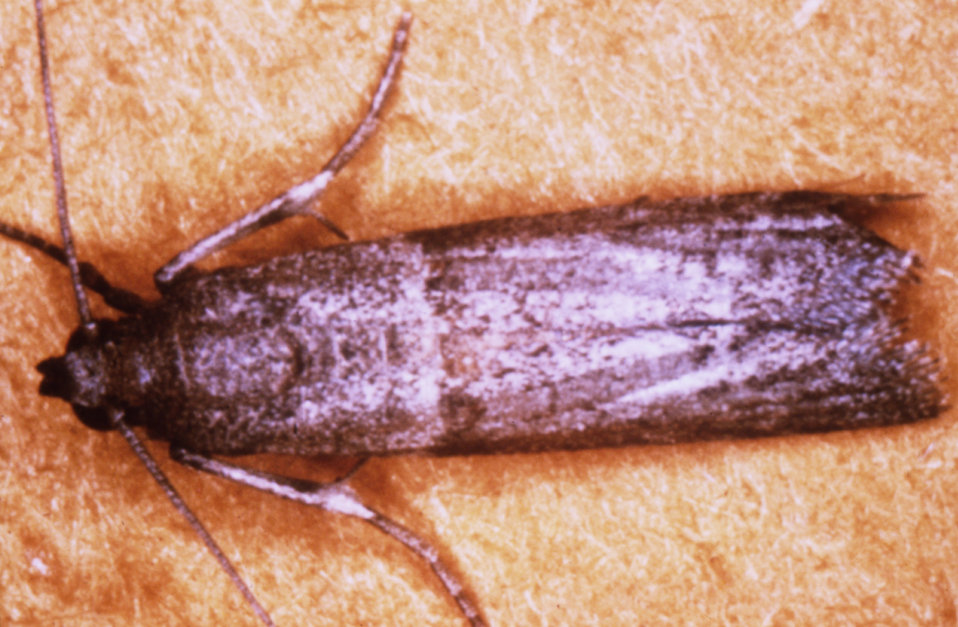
This adult flour moth (family Pyralidae) was photographed during a disease-carrier insect study around migrant labor camps.